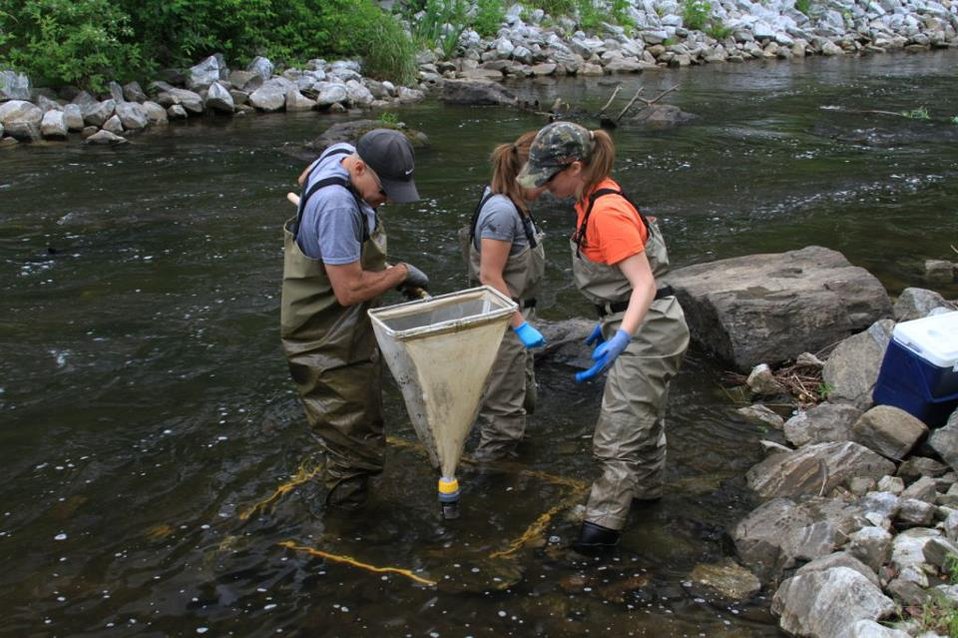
June 2012, Sampling for macroinvertebrates

Teams of scientists sampled the '1.5 Mile Reach' of the Housatonic River for these small, but important creatures. Macroinvertebrates are biological indicators of the health of an ecosystem and water quality.

To see examples of what macroinvertebrates look like: www.epa.gov/bioiweb1/html/benthosclean.html